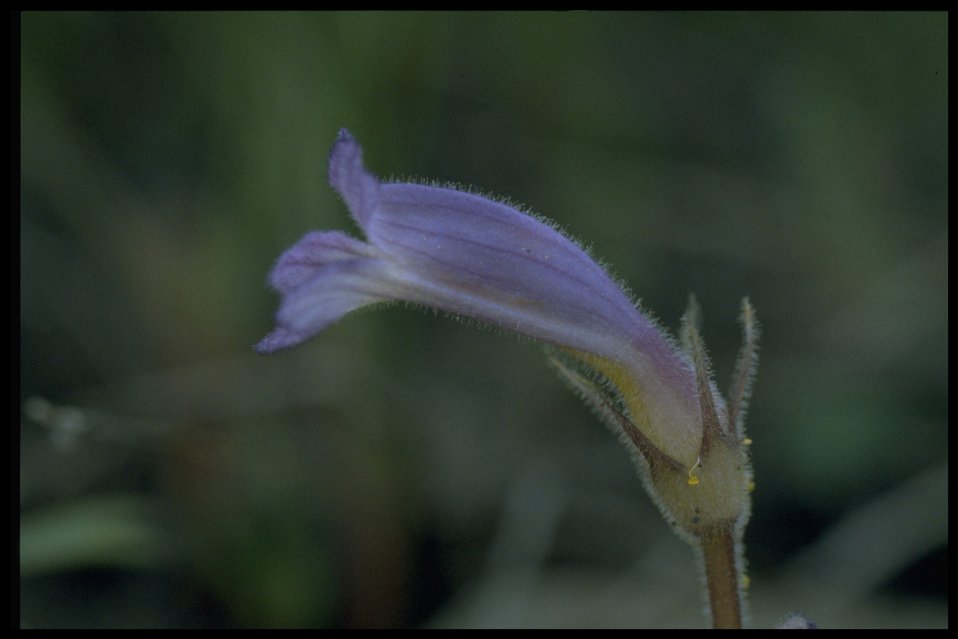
Closeup shot of oneflowered broomrape (Orobanche uniflora).